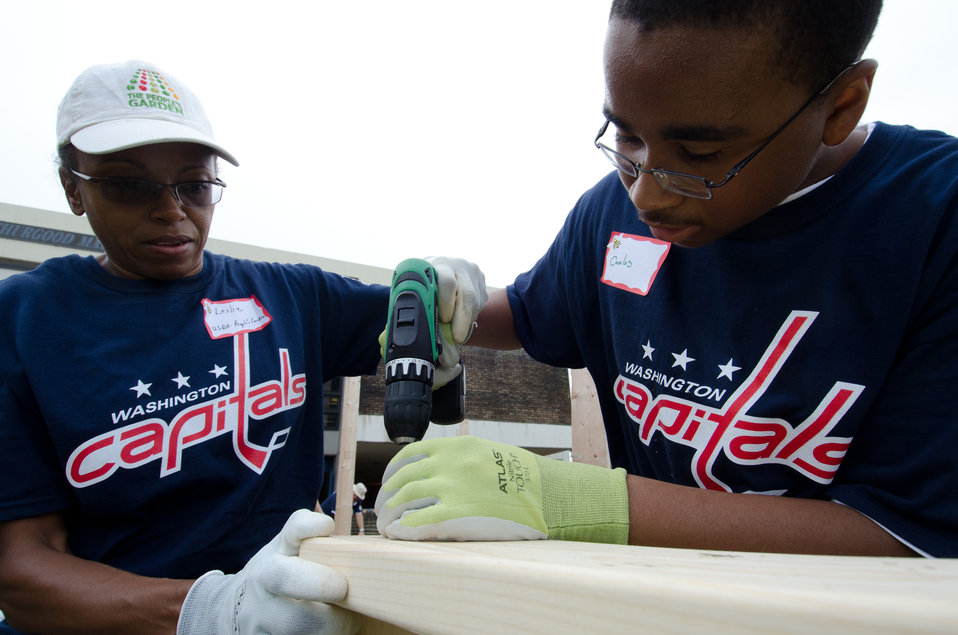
U.S. Department of Agriculture (USDA) People’s Garden Initiative-Proect Manager Leslie Burks (left) assists Carlos as he uses a power screwdriver when Executive Master Gardeners, friends, and family, along with Washington Capitals fans volunteer, during District of Columbia Public Schools’ (DCPS) Beautification Day, on Saturday, August 25, 2012, at Thurgood Marshall Elementary School, in Washington, D.C. Each year people are invited to help “spruce up” public school facilities in preparation for the first day of school. More than 70 volunteers pitched in at this large school facility. The People’s Garden effort involves building and painting raised planter boxes, then preparing the soil mixture so they are “ready to grow.” Additionally, a team that includes descendants of U.S. Supreme Court Justice Thurgood Marshall assembles a prefabricated garden toolshed. The Justice’s son, John Marshall leads the team, which includes Brianna the Justice’s great-grand daughter in one of many multi-generational efforts at this school today. Washington Capitals Forward Mike Riberio, his family and mascot Slapshot participated in every project underway at Marshall School. From the outside gardens, to inside murals, and robotics worktable construction, the teams made their goals.